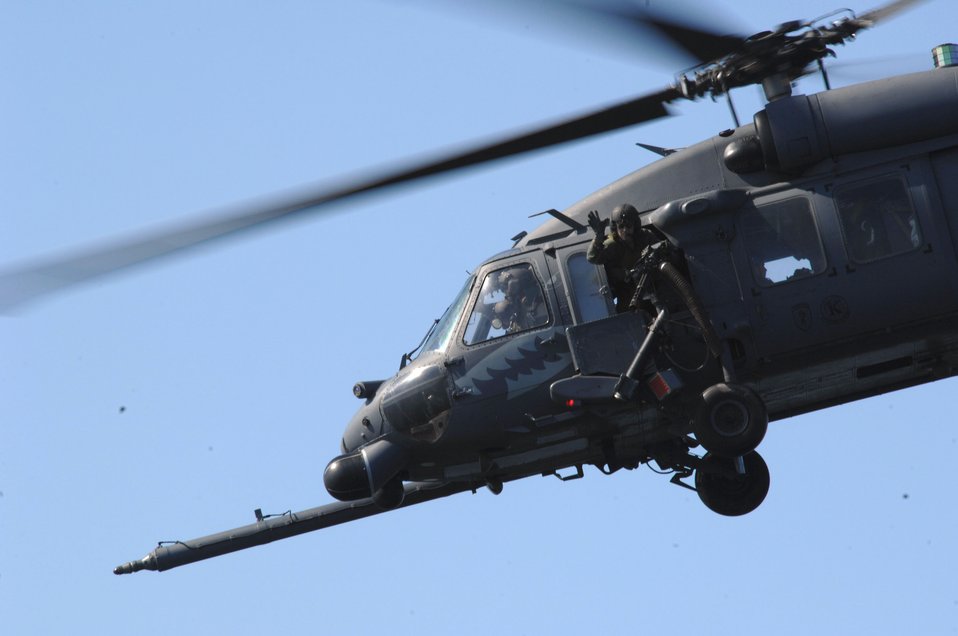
Commando Angel preps pararescuemen

An aerial gunner waves goodbye from the HH-60G Pave Hawk as it flies away with a full load of recovered pararescuemen during a dive recovery exercise March 22 in the Gulf of Mexico. The gunner is assigned to the 41st Rescue Squadron at Moody Air Force Base, Ga.